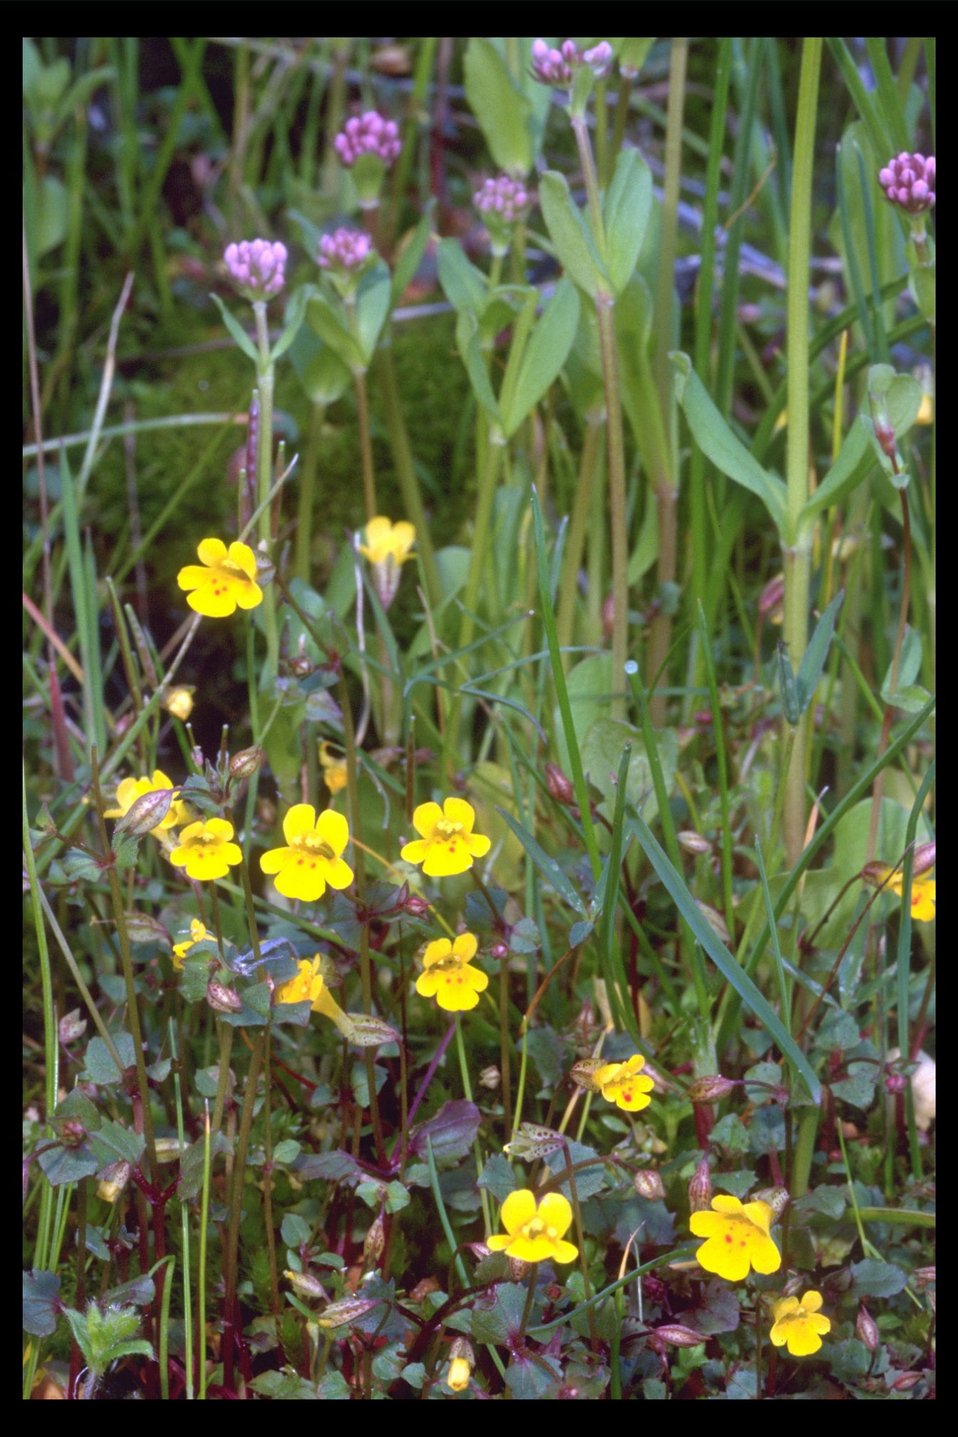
Chickweek Monkey Flower(Mimulus alsinoides) at Shady Cove.